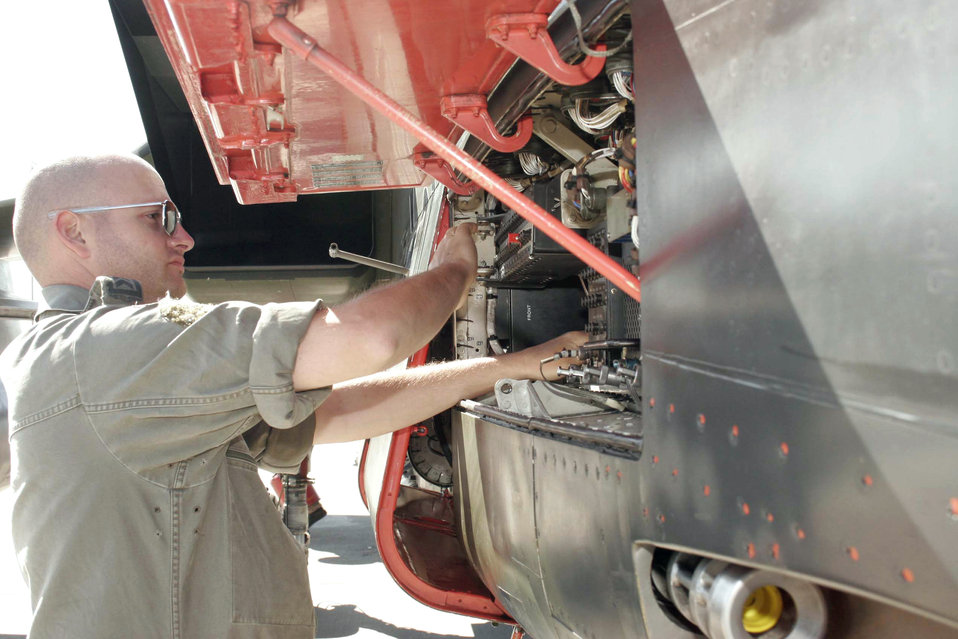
Allied aircrews train for action

Tech. Sgt. Kalle Leichenwascher performs maintenance on a Tornado interdiction strike aircraft before a flight at Mountain Home Air Force Base, Idaho, on Wednesday, June 21. German air force aircrews and maintenance teams are working alongside their American counterparts during a joint training exercise. Sergeant Leichenwascher is a crew chief with the German air force.